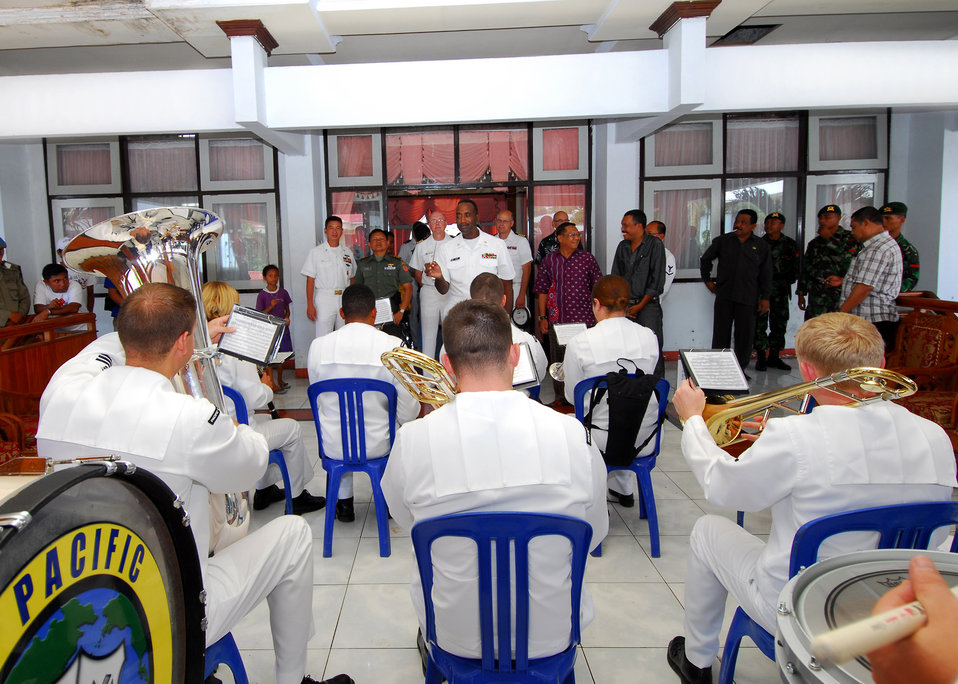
The U.S. Pacific Fleet Band plays during the closing ceremony for the Pacific Partnership 2010 visit to Ternate, Indonesia, on July 24, 2010. The Military Sealift Command hospital ship USNS Mercy (T-AH 19) is in the North Maluku Islands conducting Pacific Partnership 2010, the fifth in a series of annual U.S. Pacific Fleet endeavors conducted in Indonesia as a disaster relief exercise aimed at strengthening regional partnerships.